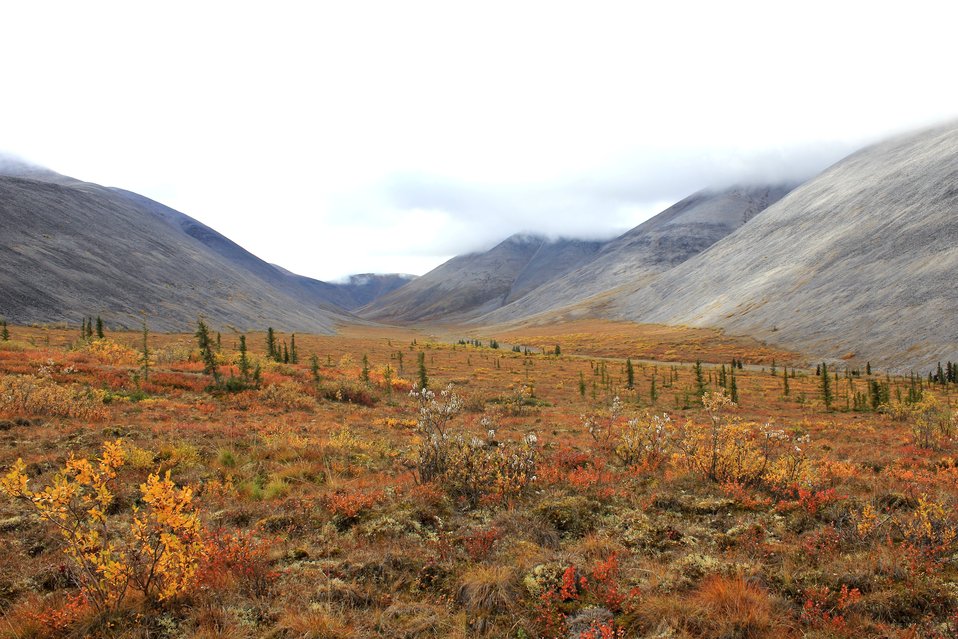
Tundra scene along the Dempster Highway